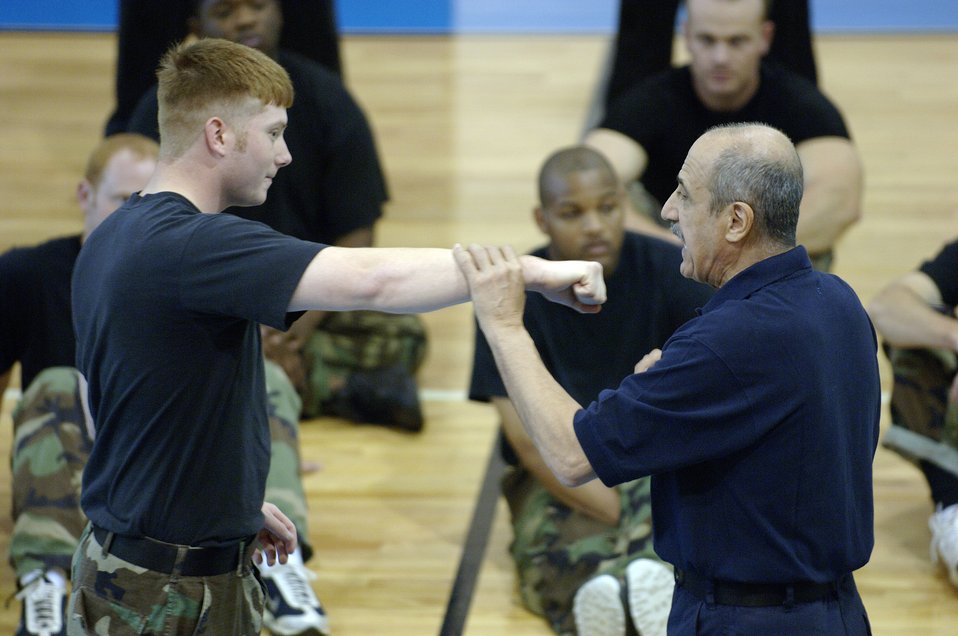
Specialized training

LANGLEY AIR FORCE BASE, Va. (AFPN) -- Master Sgt. John Pellegrini demonstrates proper hand trapping techniques on Senior Airman Cory Rodosevich. Sergeant Pellegrin a grand master in combat hapkido, teaches the class to improve combat readiness for deploying Airman. Airman Rodosevich is assigned to the 1st Security Forces Squadron.